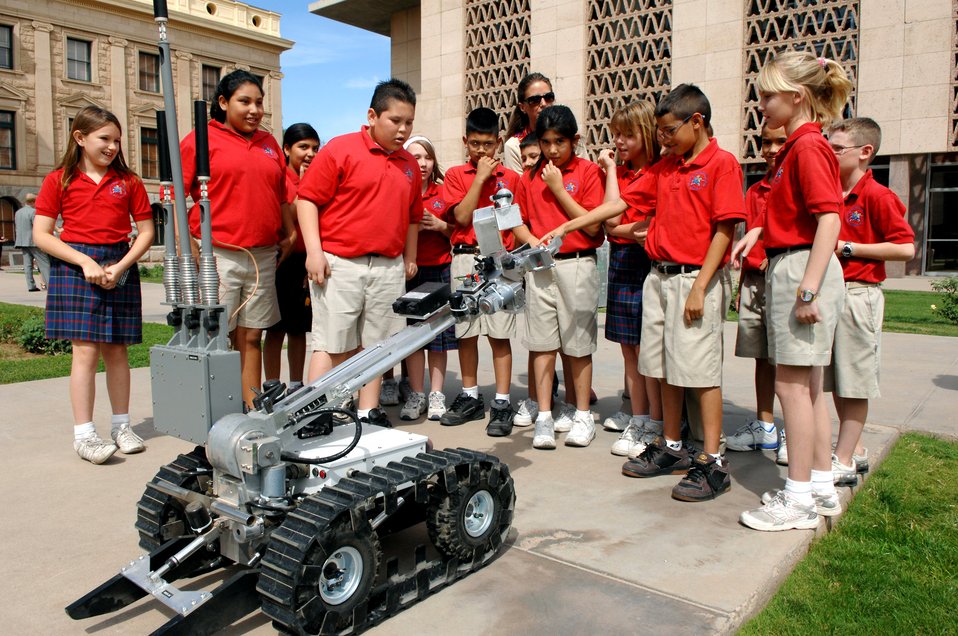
Air Force Week kicks off in Phoenix

Students from Our Lady of Perpetual Help check out one of the explosive ordnance disposal robots during a field trip to the Arizona state capital in Phoenix. The explosive ordnance disposal specialists from Luke Air Force Base brought the robot to the capital to help kick off Air Force Week.